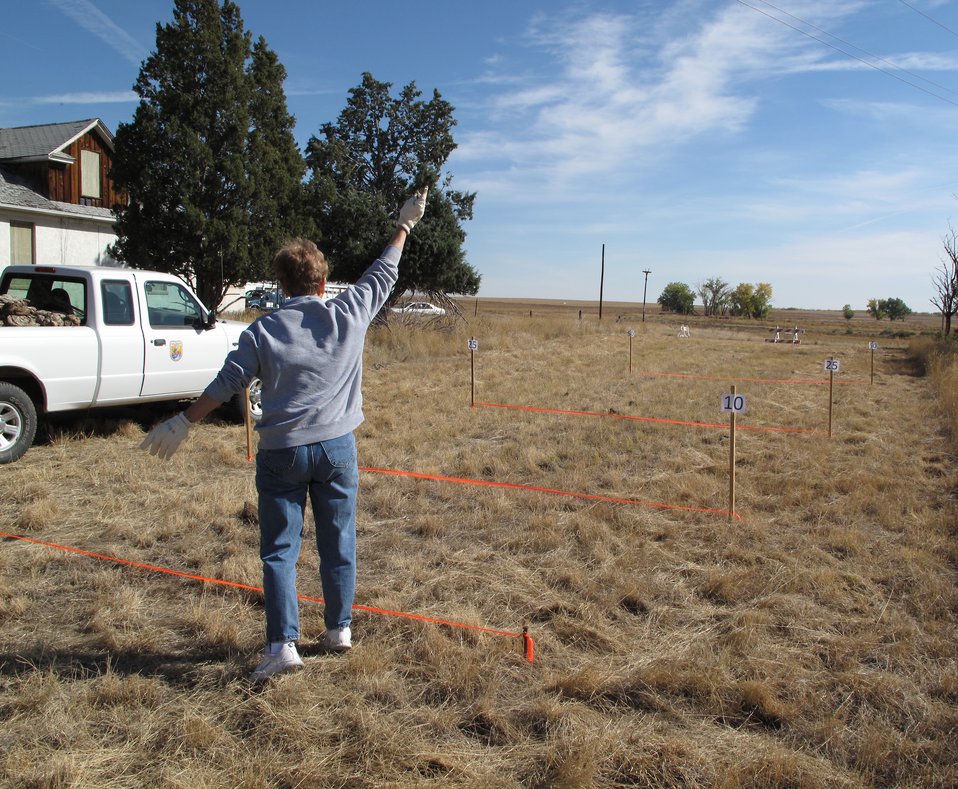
Refuge Round-up 2010

Bison chip toss.